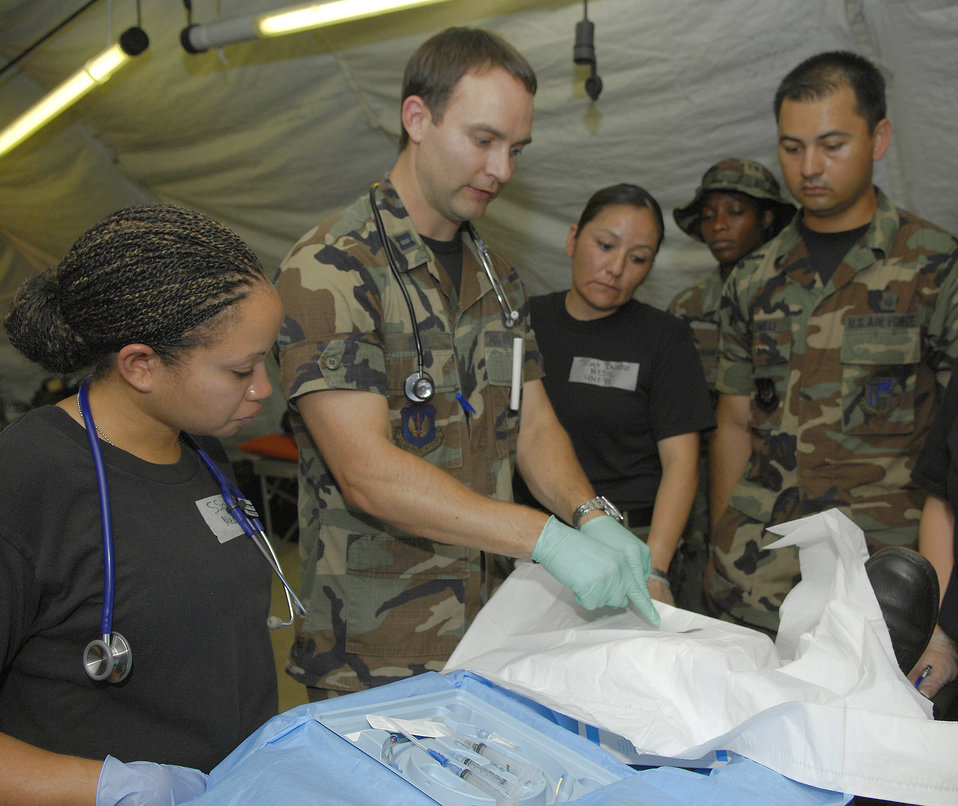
American and African medical personnel train together

Capt. Chad Khal teaches Airmen about central line insertion procedures July 18 during a mass casualty exercise in Bamako, Mali. More than 90 servicemembers deployed for MEDFLAG 08, a multi-national medical training exercise designed to enhance medical capabilities and readiness for U.S. and African Forces. Captain Khal is a family practitioner deployed from the 31st Medical Group, Aviano Air Base, Italy.